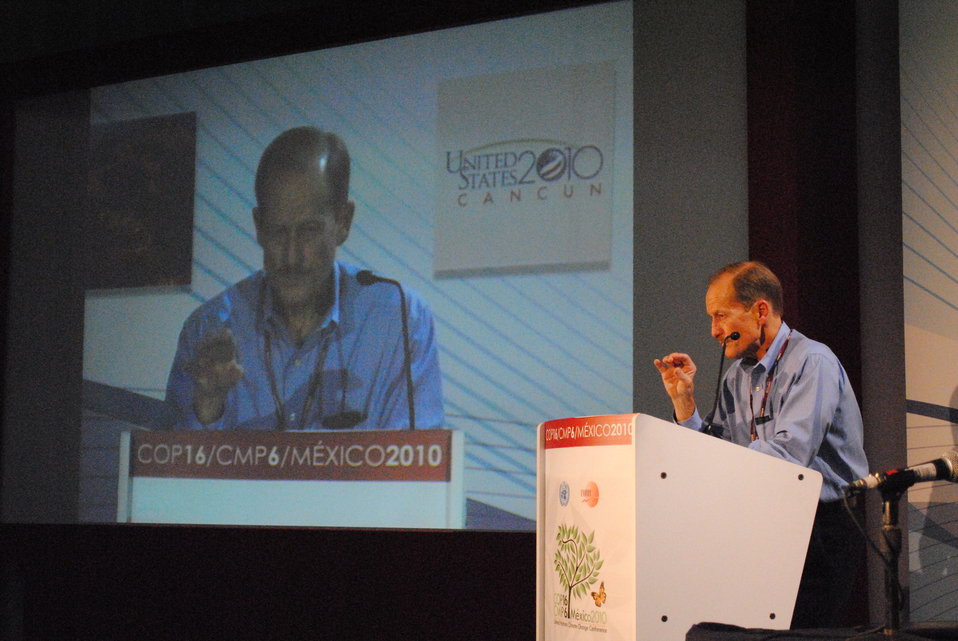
Dr. Cleaves Demonstrates How the U.S. Forest Service Is Integrating Climate Change Into its Management and Operations

Dr. David Cleaves, a Climate Change Advisor to the Chief of the U.S. Forest Service, presents the side event, 'Adaptation and Sustainable Management for the U.S. Forests,' at the U.S. Center at COP-16 in Cancun, Mexico, on November 30, 2010.